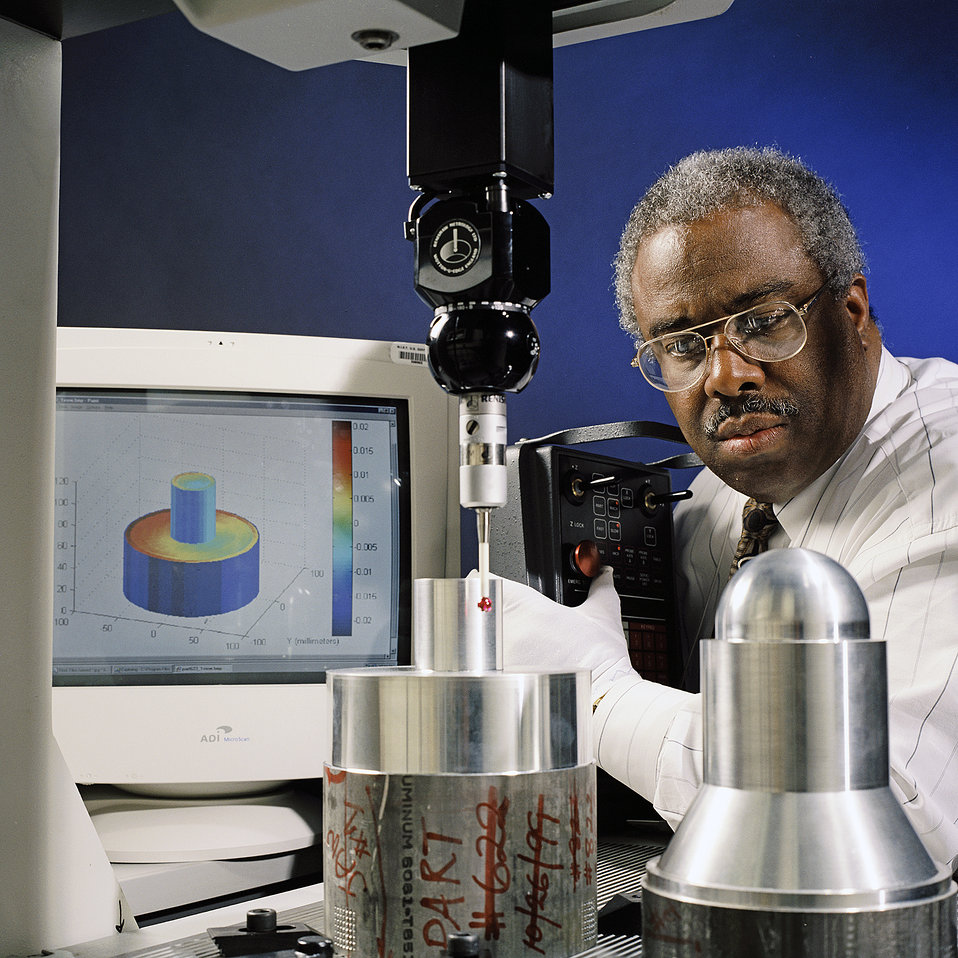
Coordinate measuring machines (CMMs) are used to precisely measure the dimensions of complex automotive and other product parts. Tight temperature control in the NIST Advanced Measurement Laboratory will allow NIST to improve the accuracy of its CMM calibration services and to conduct research into the complex effects of changing temperatures on CMM performance. Here, mechanical engineer Herb Bandy uses a CMM to measure the dimensions of a cylinder-shaped machined part.